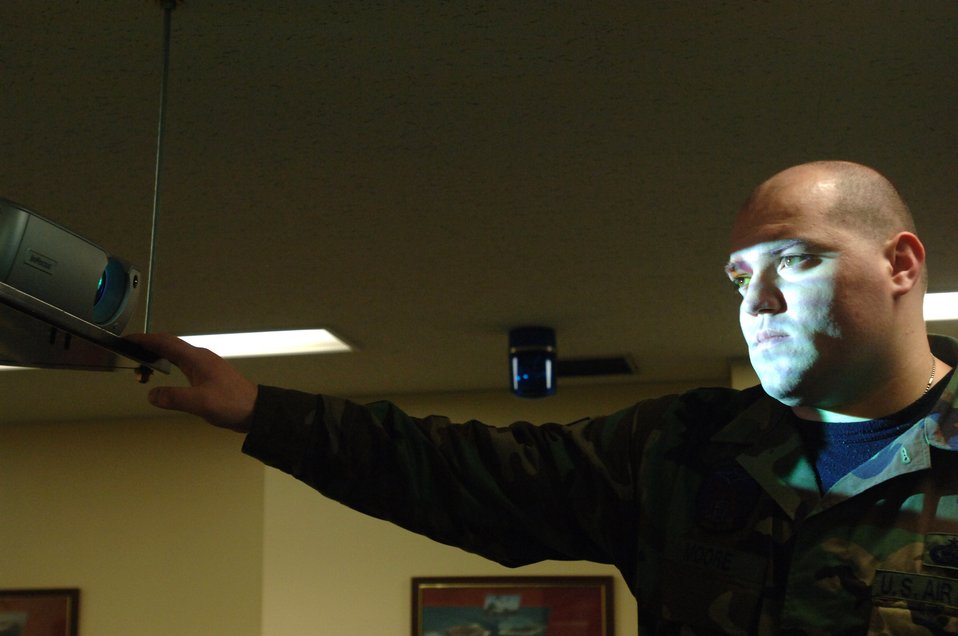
Misawa Airman rescues woman in flipped vehicle

Staff Sgt. Mark Moore adjusts a projector prior to giving a briefing Feb. 19 at Misawa Air Base, Japan. While off-duty recently, Sergeant Moore came across and helped a Japanese woman who was injured from a car accident and had her vehicle flipped over. He is assigned to the 35th Operations Support Squadron.